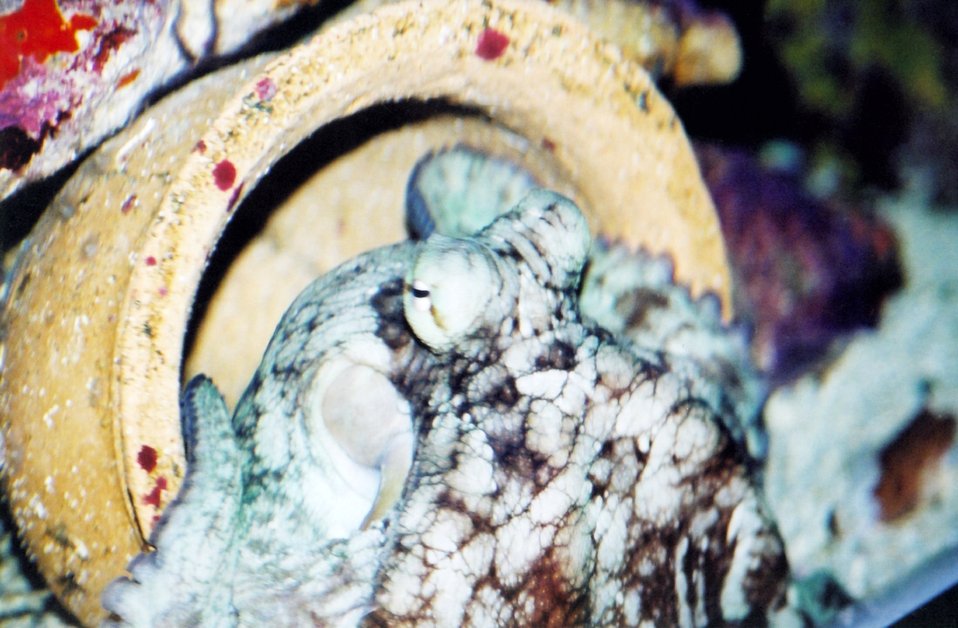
An octopus at the marine gardens aquariums of Coral World.